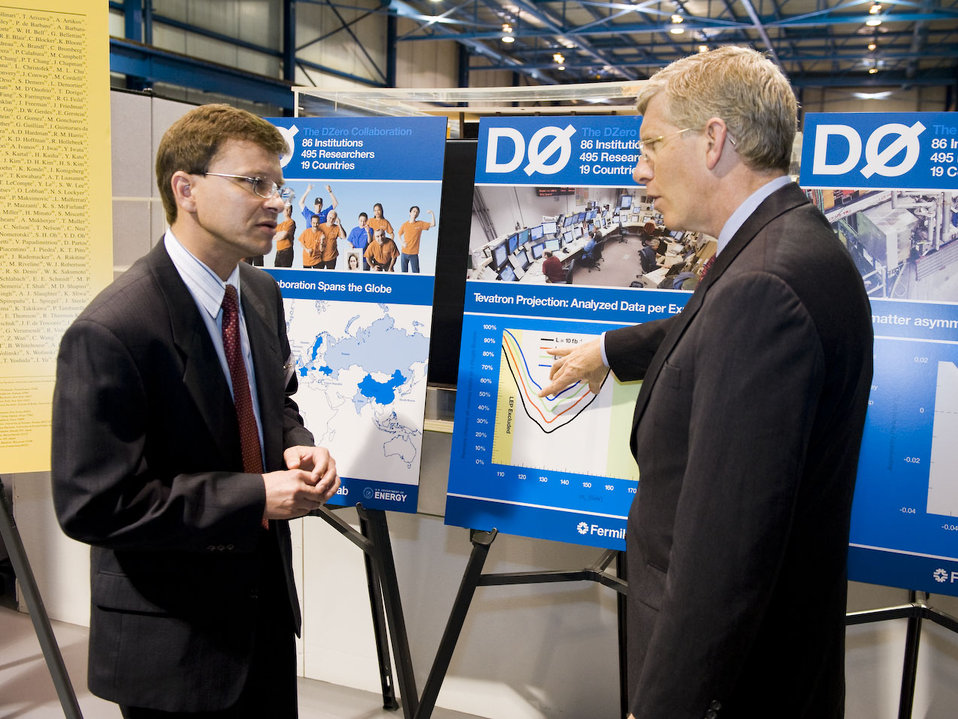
Dmitri Denisov, cospokesperson of the DZero experiment at Fermilab, briefs Deputy Secretary Daniel Poneman on the latest results of the search for the Higgs particle using the Tevatron collider.